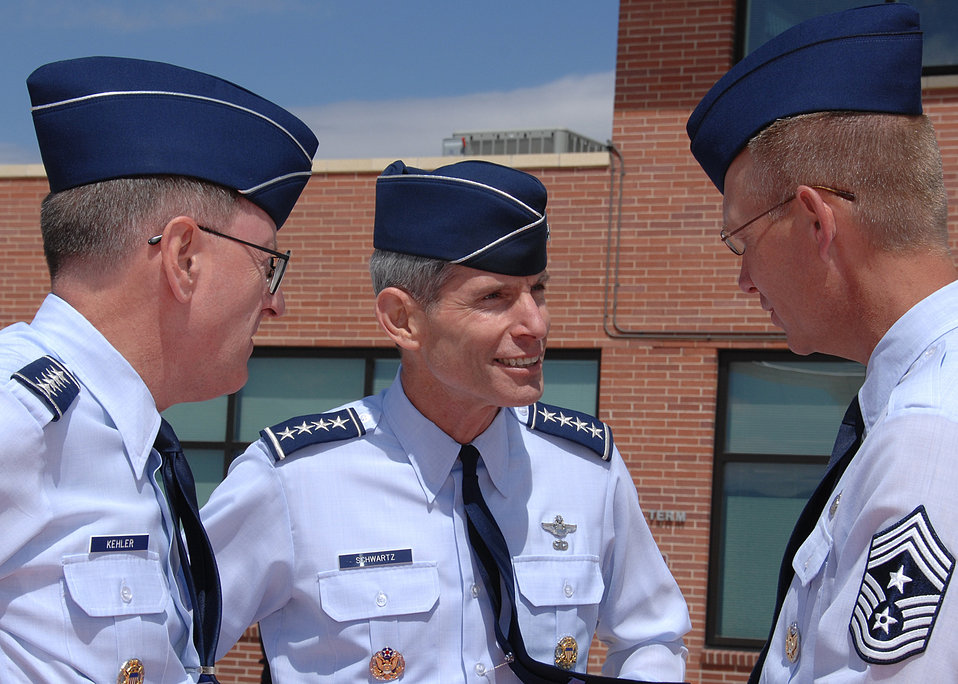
Air Force Chief of Staff defines standard of excellence

Air Force Space Command Commander Gen. C. Robert Kehler (left) and AFSPC Command Chief Todd Small (right) say farewell to Gen. Norton A. Schwartz, Air Force Chief of Staff, after he addressed Airmen at Peterson Air Force Base, Colo., Sept. 2.